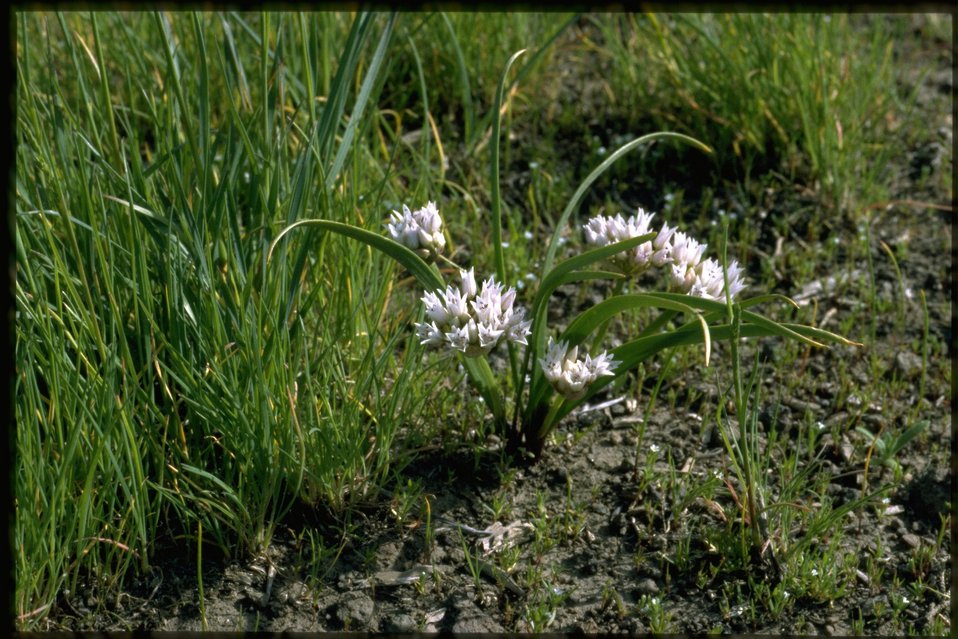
Farshot of Tolmie's Onion, Allium Tolmiei, wildflowers.